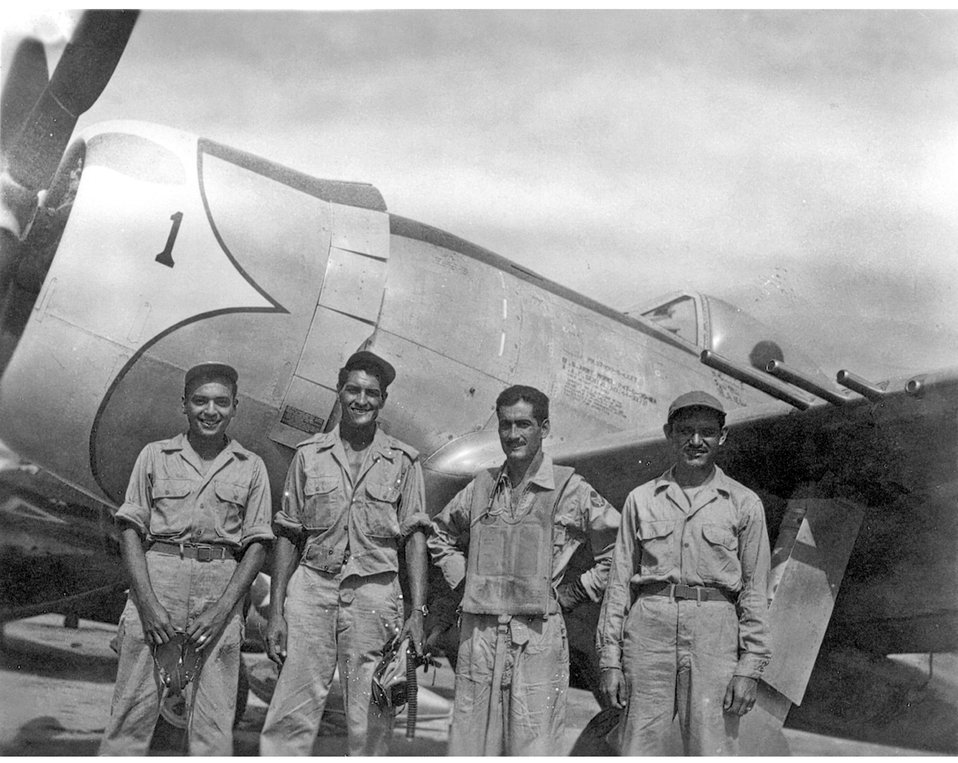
Museum remembers 'Aztec Eagles'

Mexican air force Capt. Radames Gaxiola Andrade stands in front of his P-47D with his maintenance team after he returned from a combat mission. Captain Andrade was assigned to the Mexican air force's Escuadron 201. Members of the Escuadron 201 fought alongside U.S. forces during World War II.